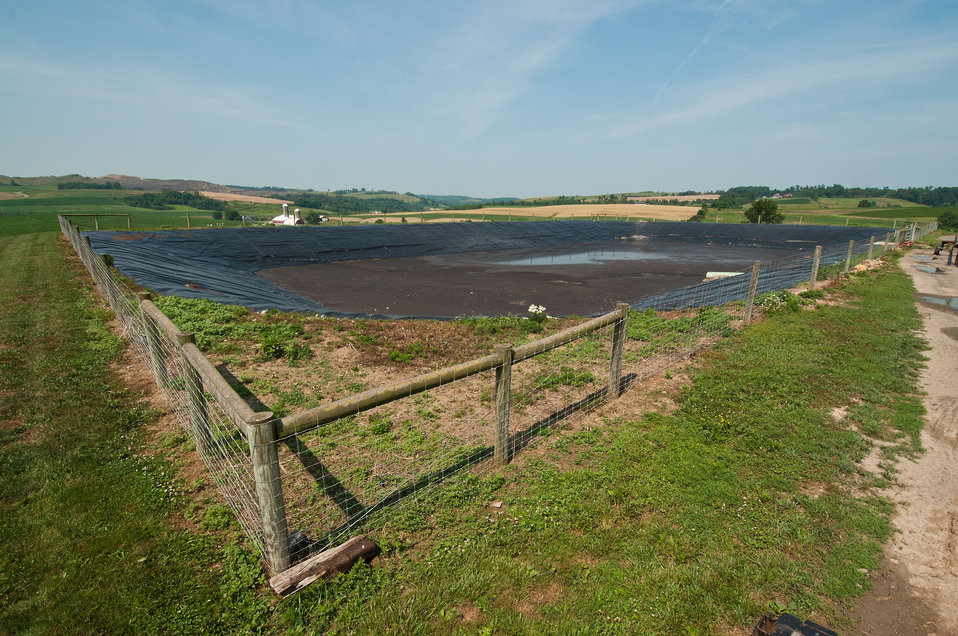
The lagoon at Pennwood Dairy Farms owned and operated by the Stoltzfus family in Berlin, PA. The lagoon holds the liquid waste used for fertilizer after the solids have been separated by an anaerobic digester the dairy uses to produce energy. The digester produces one million kilowatt hours; half of the energy needs of the farm, the other five hundred thousand kilowatt hours are sold back to the grid. An anaerobic digester is a component of a waste management system that provides biological treatment in the absence of oxygen. The digester captures biogas for energy production, manages odors, reduces the net effect of greenhouse gas emissions, and reduces pathogens. The anaerobic digester practice is part of a planned conservation management system that manages manure and/or comprehensive nutrient management system. Agriculture Secretary Tom Vilsack visited the dairy on Tuesday, July 17, 2012. During his visit Secretary Vilsack highlighted the U.S. Department of Agriculture’s (USDA) energy efficiency programs and announced a new effort to help rural consumers make affordable, energy-efficient improvements to their homes and businesses.